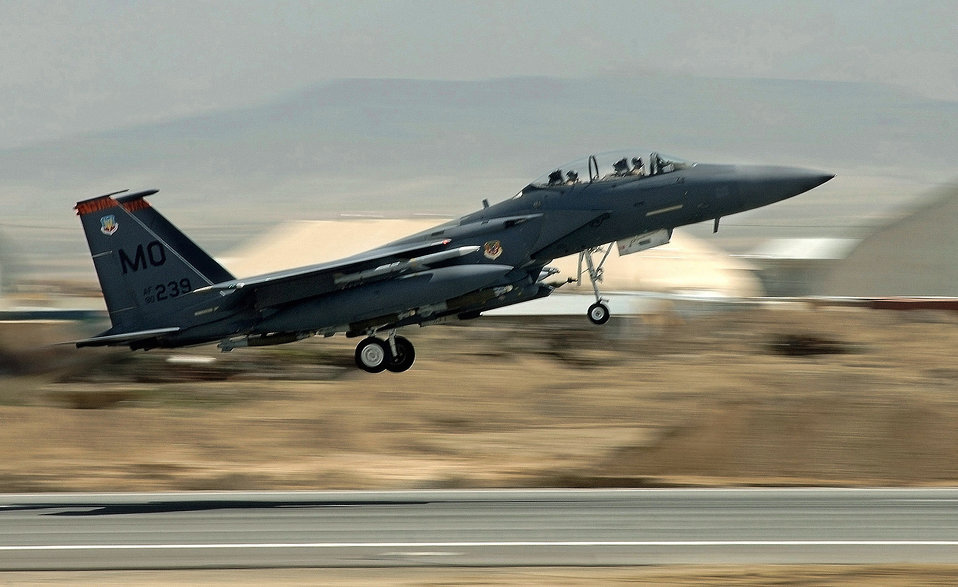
Feb. 5 airpower summary: F-15Es provide armed overwatch

An F-15E Strike Eagle takes off from Bagram Airfield, Afghanistan, to provide close-air support for International Security Assistance Force ground operations. F-15Es perform shows of force and provide armed overwatch for coalition ground convoys.